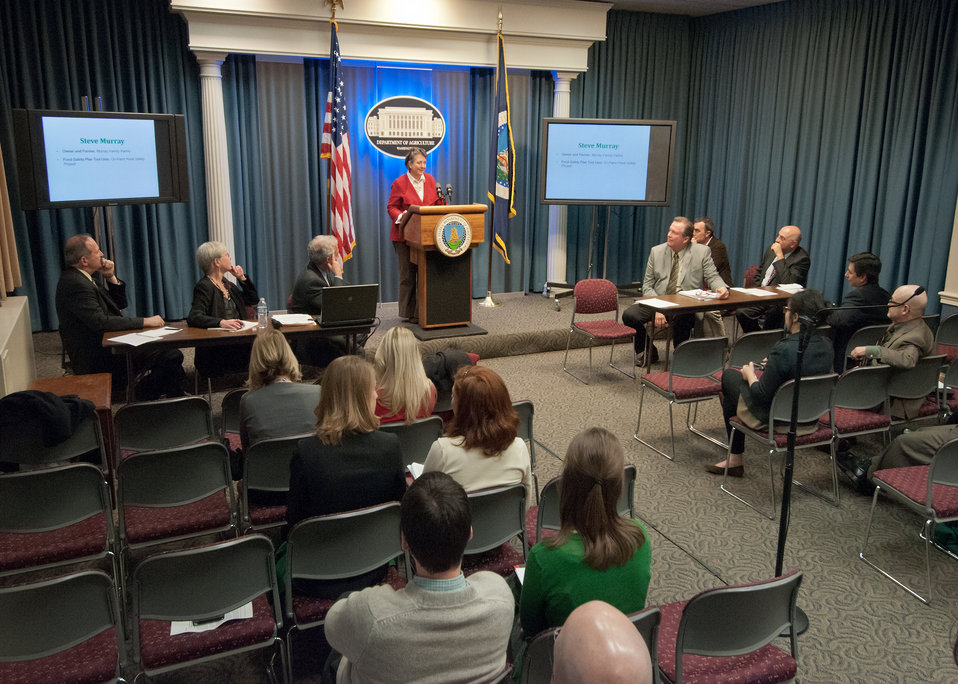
Agriculture Deputy Secretary Dr. Kathleen Merrigan with leaders from agriculture and food organizations introduced a free online tool to assist U.S. producers of all sizes achieve Good Agricultural Practices (GAP), helping to further expand economic opportunities for American Agriculture at the United States Department of Agriculture in Washington, D.C, on Thursday, December 15, 2011. USDA’s GAP audit verification program focuses on best agricultural practices to verify that farms are producing, and packers are handling and storing, fruits and vegetables in the safest manner to minimize food safety hazards. The online tool, part of FamilyFarmed.org’s On-Farm Food Safety Project, is the first of its kind and was developed by a broad coalition of farm and produce industry partners with lead funding from the USDA Risk management Agency. It is available at www.onfarmfoodsafety.org.